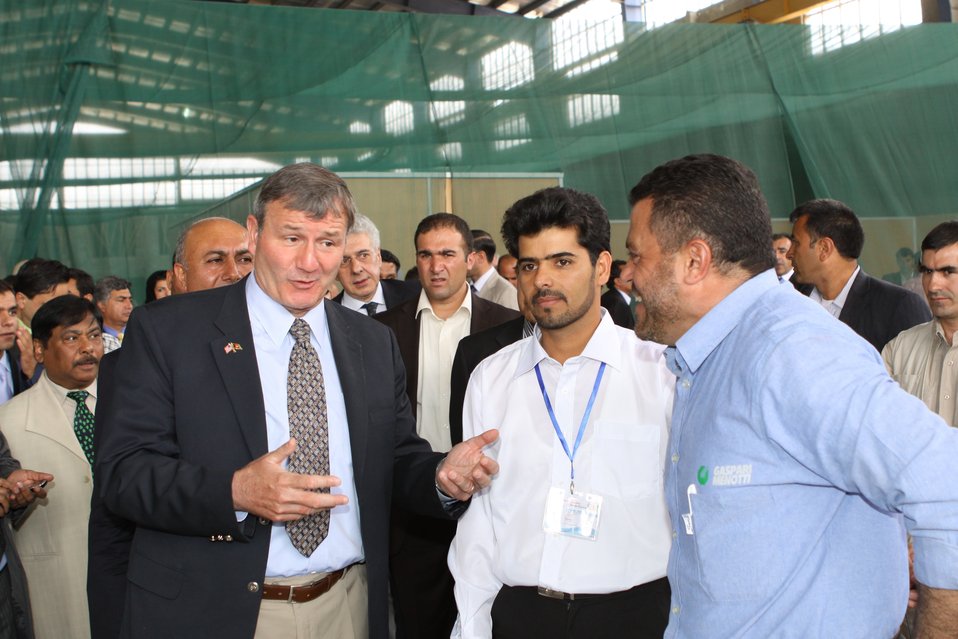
100525 Hirat Marble Conference 461